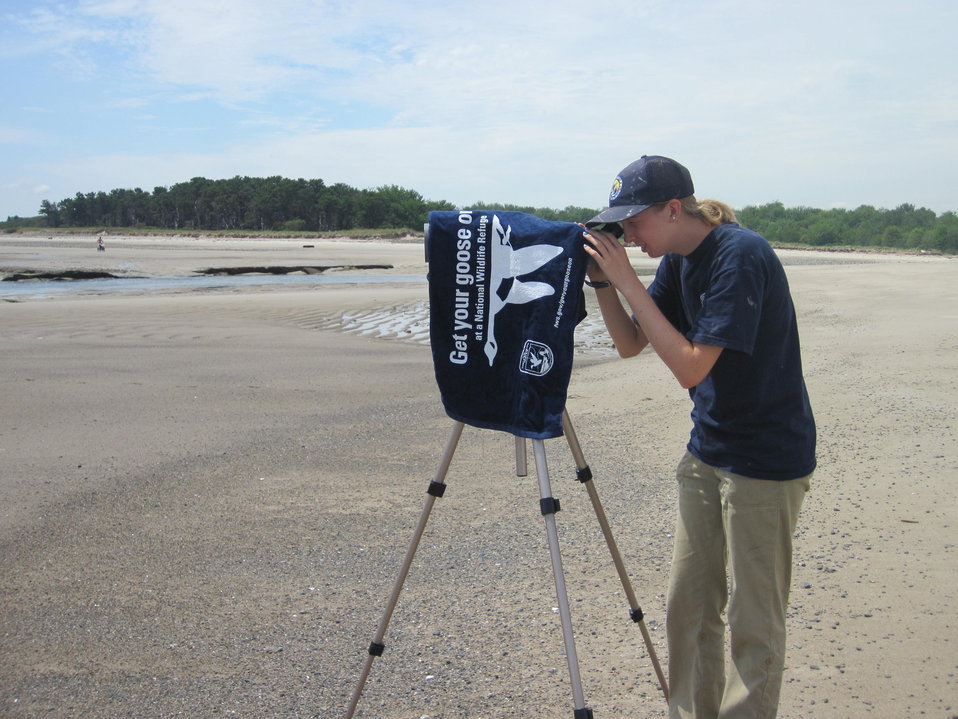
Get Your Goose On!

Intern Brynna Bolger using a spotting scope to look for piping plovers!